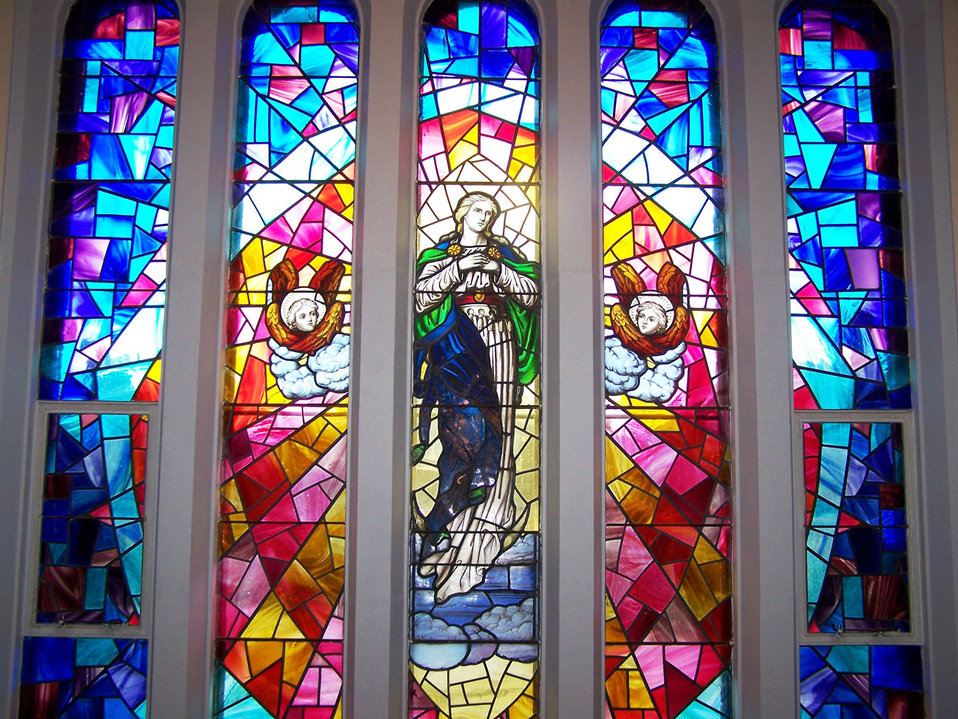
A stained glass window

A window at a local church.